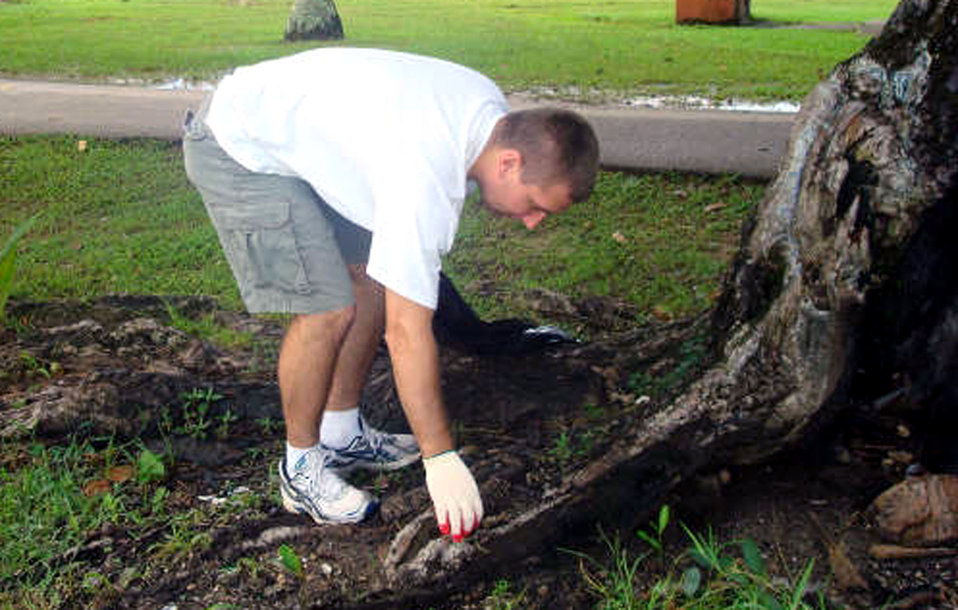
Deployers help support coastal cleanup

1st Lt. Andrew Smeckert picks up trash Sept. 15 during Guam's 13th annual coastal cleanup. The event is geared toward preserving the island's natural beauty. Deployers and permanent party members from Andersen Air Force Base, Guam, participate in the cleanup each year.